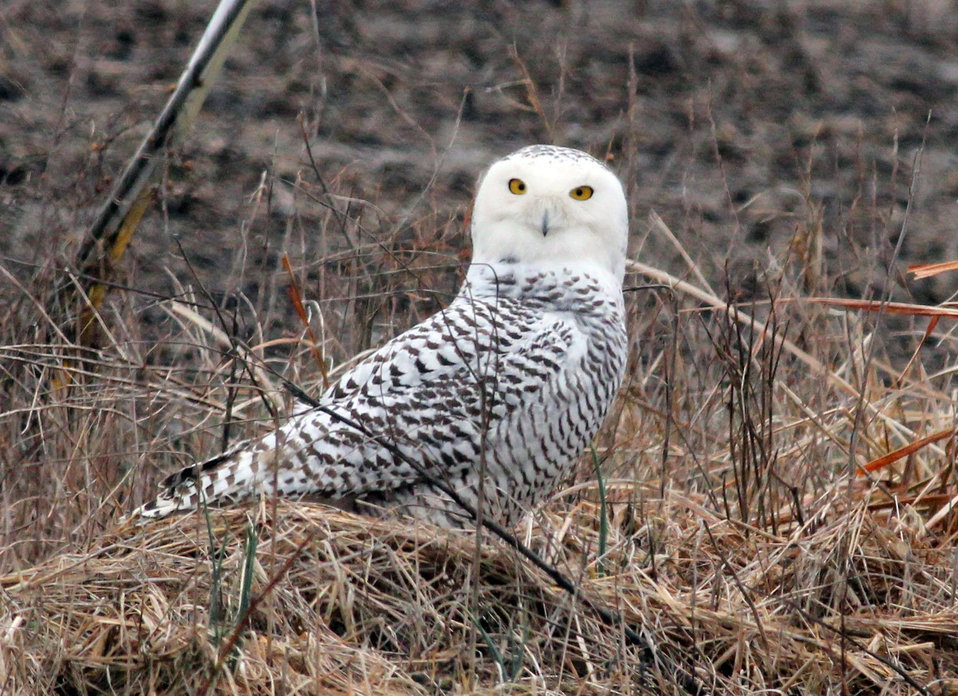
snowy owl

In a major snowy owl irruption, these beautiful Arctic owls have been overwintering at refuges across the Lower 48 states, from Siletz Bay National Wildlife Refuge in OR to Parker River National Wildlife Refuge in MA. This male snowy owl was photographed near Cypress Creek National Wildlife Refuge on Jan. 27, 2012.